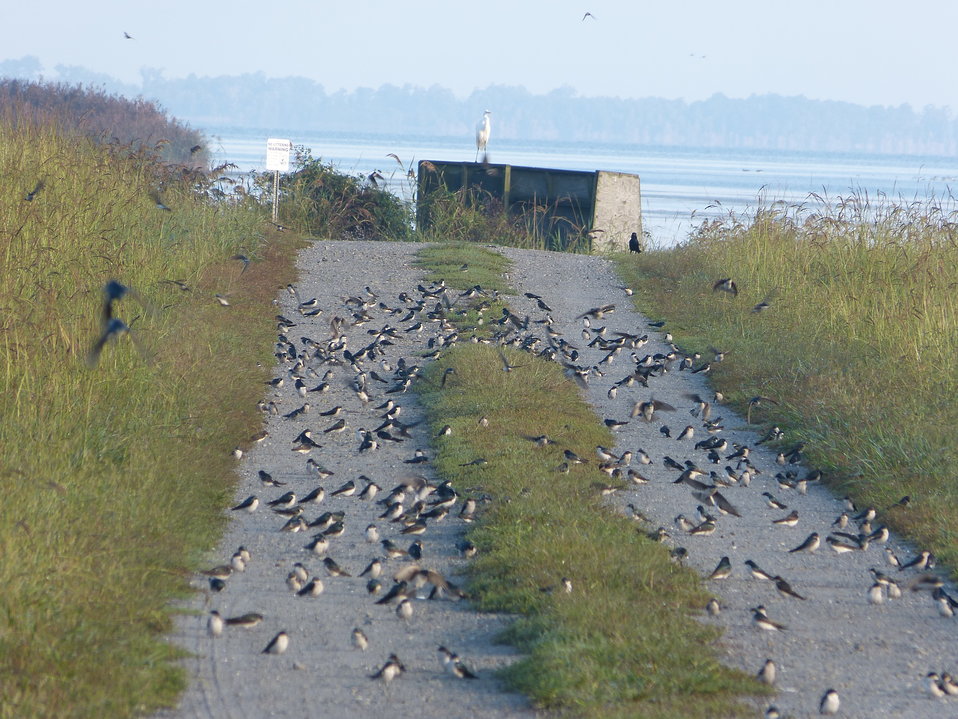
Tree swallows

At Mattamuskeet National Wildlife Refuge in North Carolina.